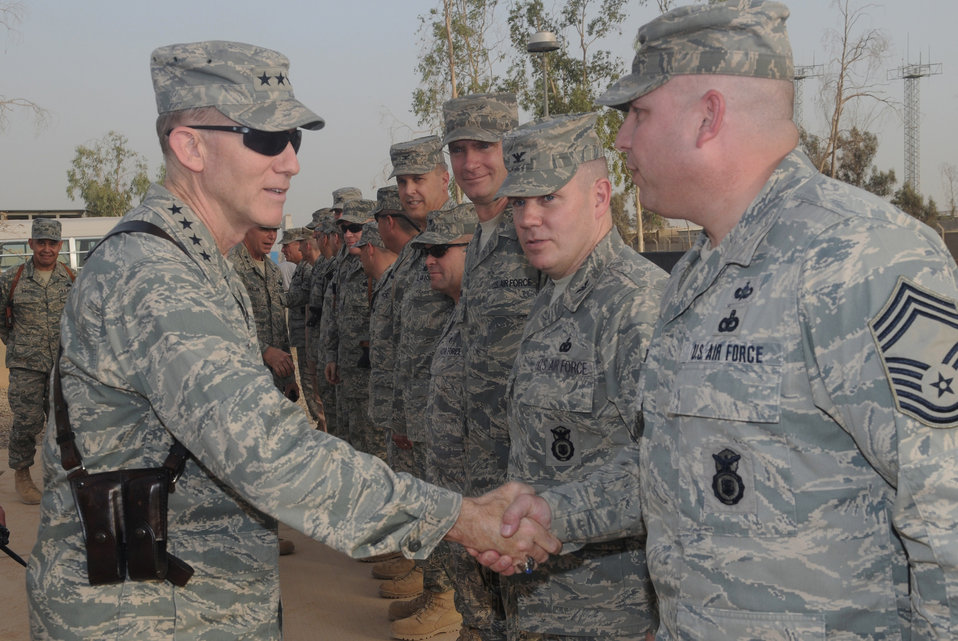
ACC commander visits Airmen at Joint Base Balad

The Commander of Air Combat Command, Gen. John D. W. Corley, shakes hands with Chief Master Sgt. Lawrence Rettele at the 332nd Air Expeditionary Wing headquarters building July 16 at Joint Balad Base, Iraq. General Corley visited the installation to thank Joint Base Balad personnel for their service. Chief Rettele is assigned to the 332nd Expeditionary Security Forces Group. General Corley is also the commander of the Air Component of Joint Forces Command.